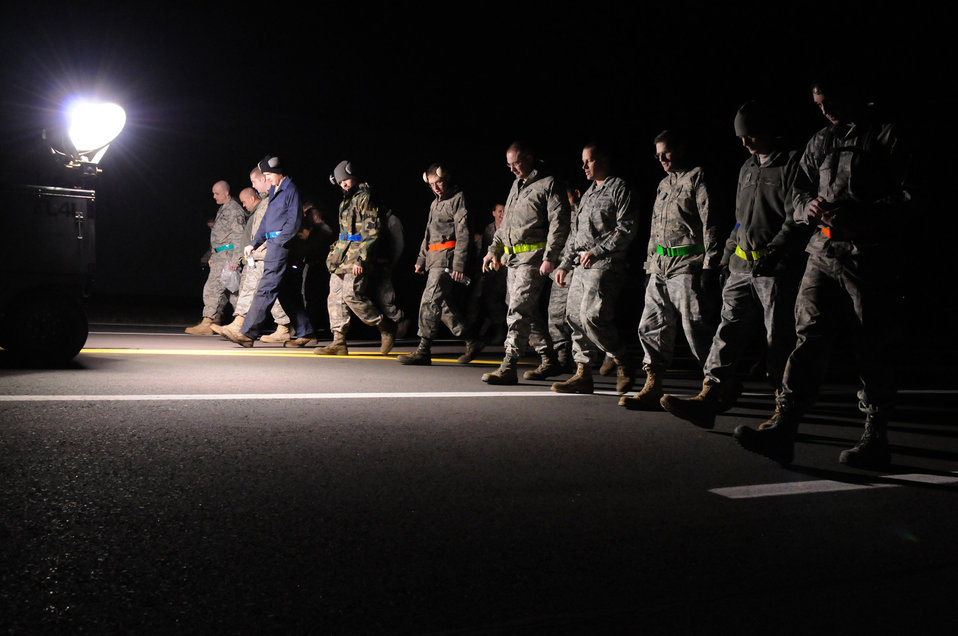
Operation Odyssey Dawn

SPANGDAHLEM AIR BASE, Germany ? Airmen assigned to the 52nd Maintenance Group perform a foreign objects and debris inspection of a taxi-way in preparation for the take-off of 480th Fighter Squadron F-16 Fighting Falcons in support of Operation Odyssey Dawn March 19. Joint Task Force Odyssey Dawn is the U.S. Africa Command task force established to provide operational and tactical command and control of U.S. military forces supporting the international response to the unrest in Libya and enforcement of United Nations Security Council Resolution (UNSCR) 1973. UNSCR 1973 authorizes all necessary measures to protect civilians in Libya under threat of attack by Qadhafi regime forces. JTF Odyssey Dawn is commanded by U.S. Navy Admiral Samuel J. Locklear, III.